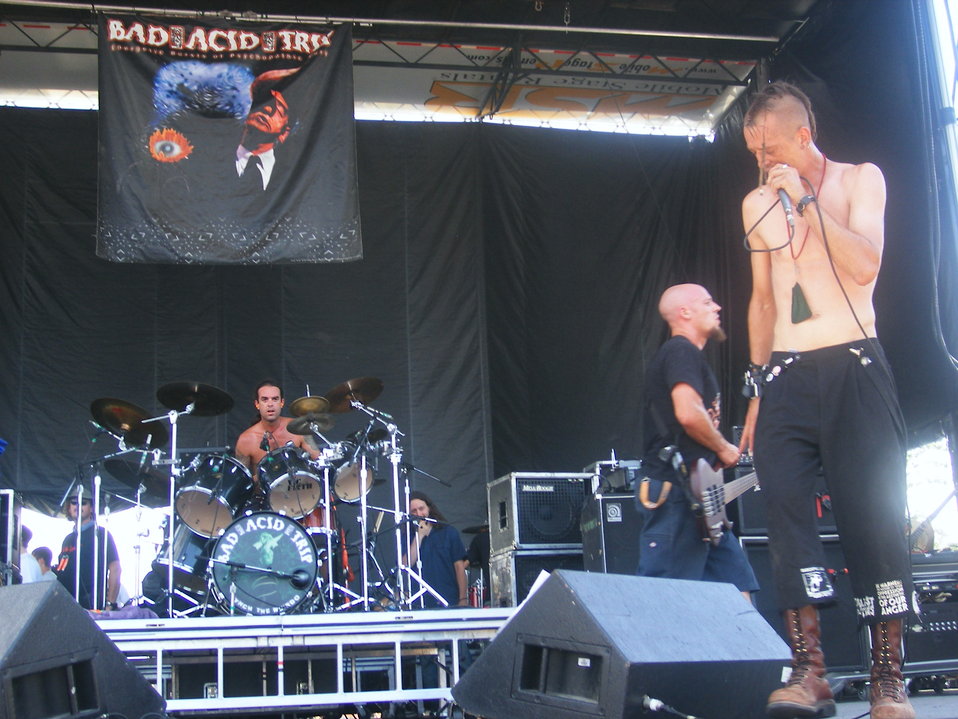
Bad Acid Trip @ Ozzfest 2006 In West Palm Beach, FL